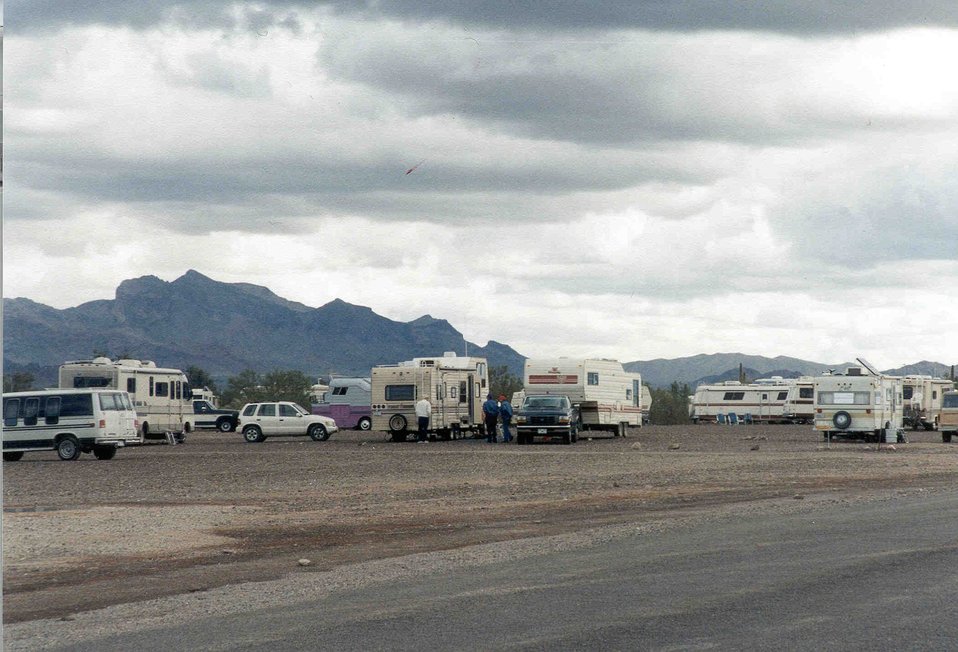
Long Term Visitor Area during the peak season